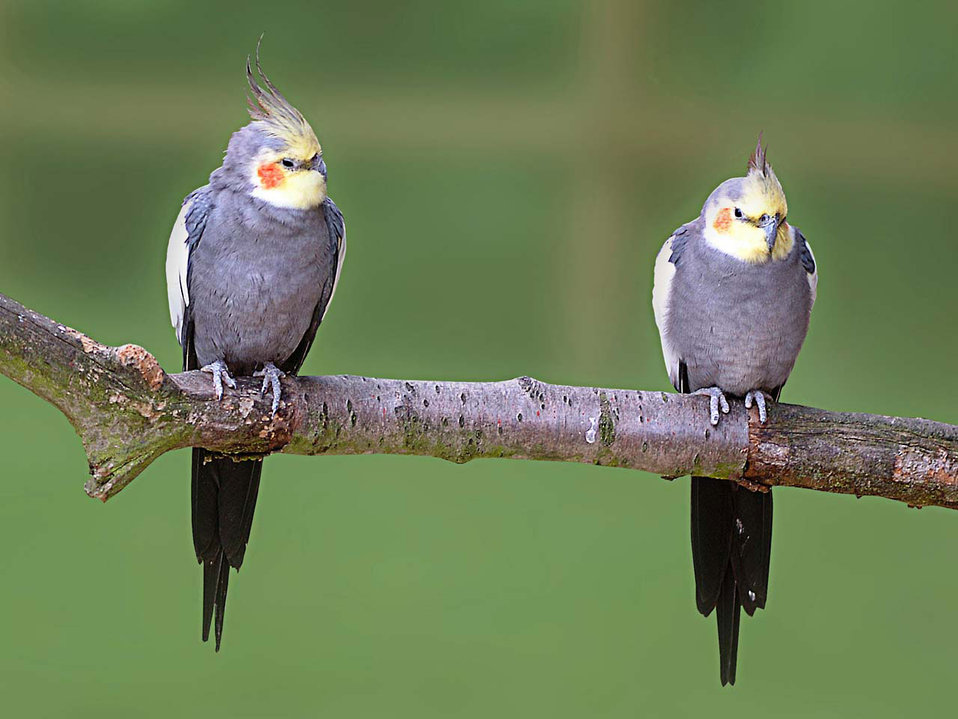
Two budgerigars on a branch in conversational mode.